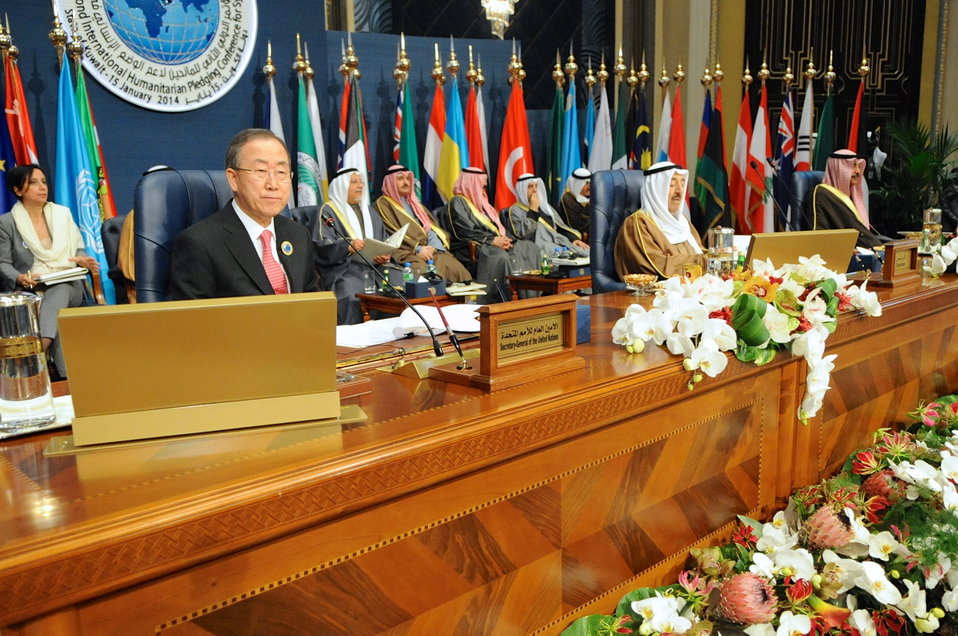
U.N. Secretary-General, Kuwaiti Amir Preside Over Syrian Donors' Conference

United Nations Secretary-General Ban Ki-moon joins Amir Sheikh Sabah al-Ahmed Al Sabah of Kuwait before the start of the Syrian Donors' Conference in Kuwait City on January 15, 2014, which the Amir kicked off with a pledge of $500 million.